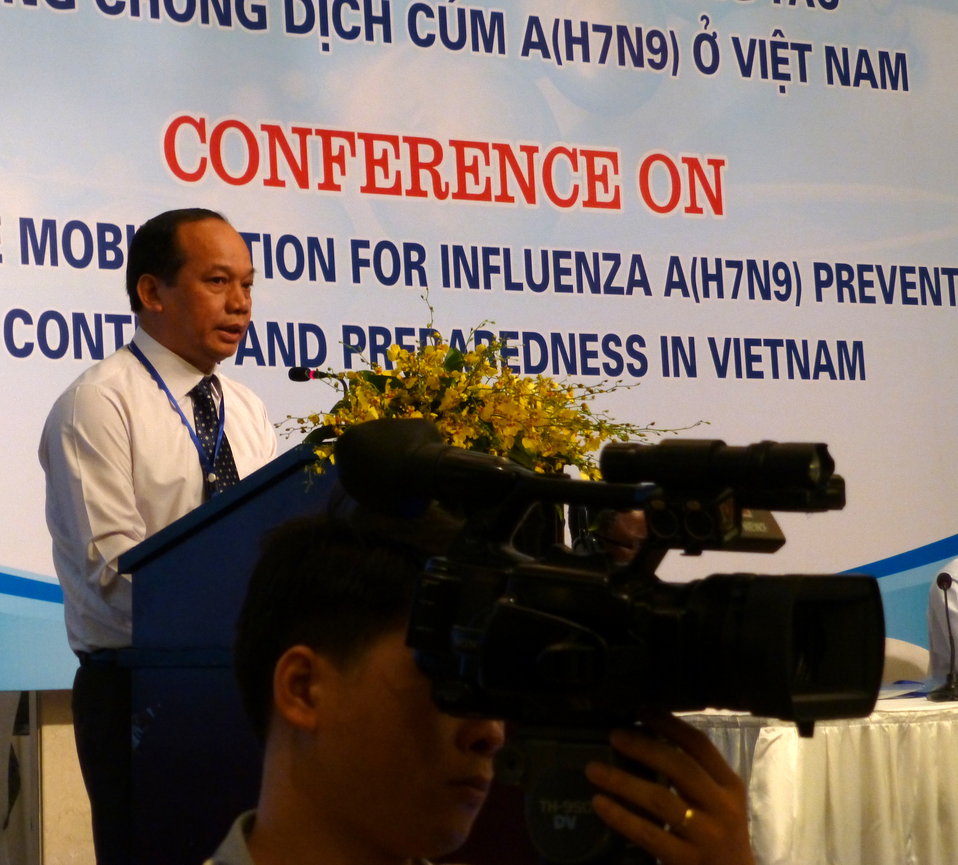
Mr. Vu Van Tam, Vice Minister of Agriculture and Rural Development, speaks at the Conference on Resource Mobilization for Influenza A (H7N9) Prevention, Control and Preparedness in Vietnam

Hanoi, May 6, 2013
Supported by USAID Vietnam